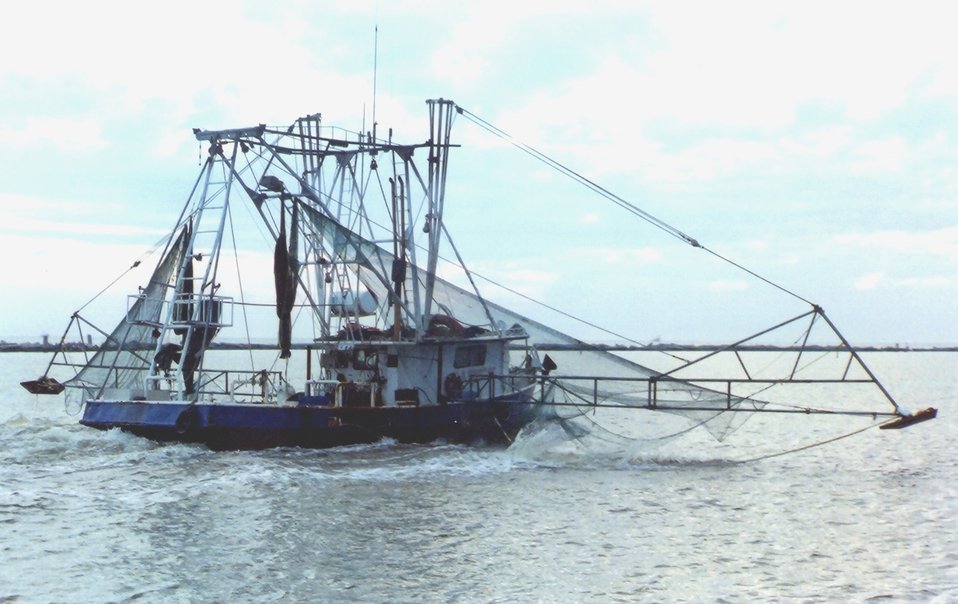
Shrimp boat.